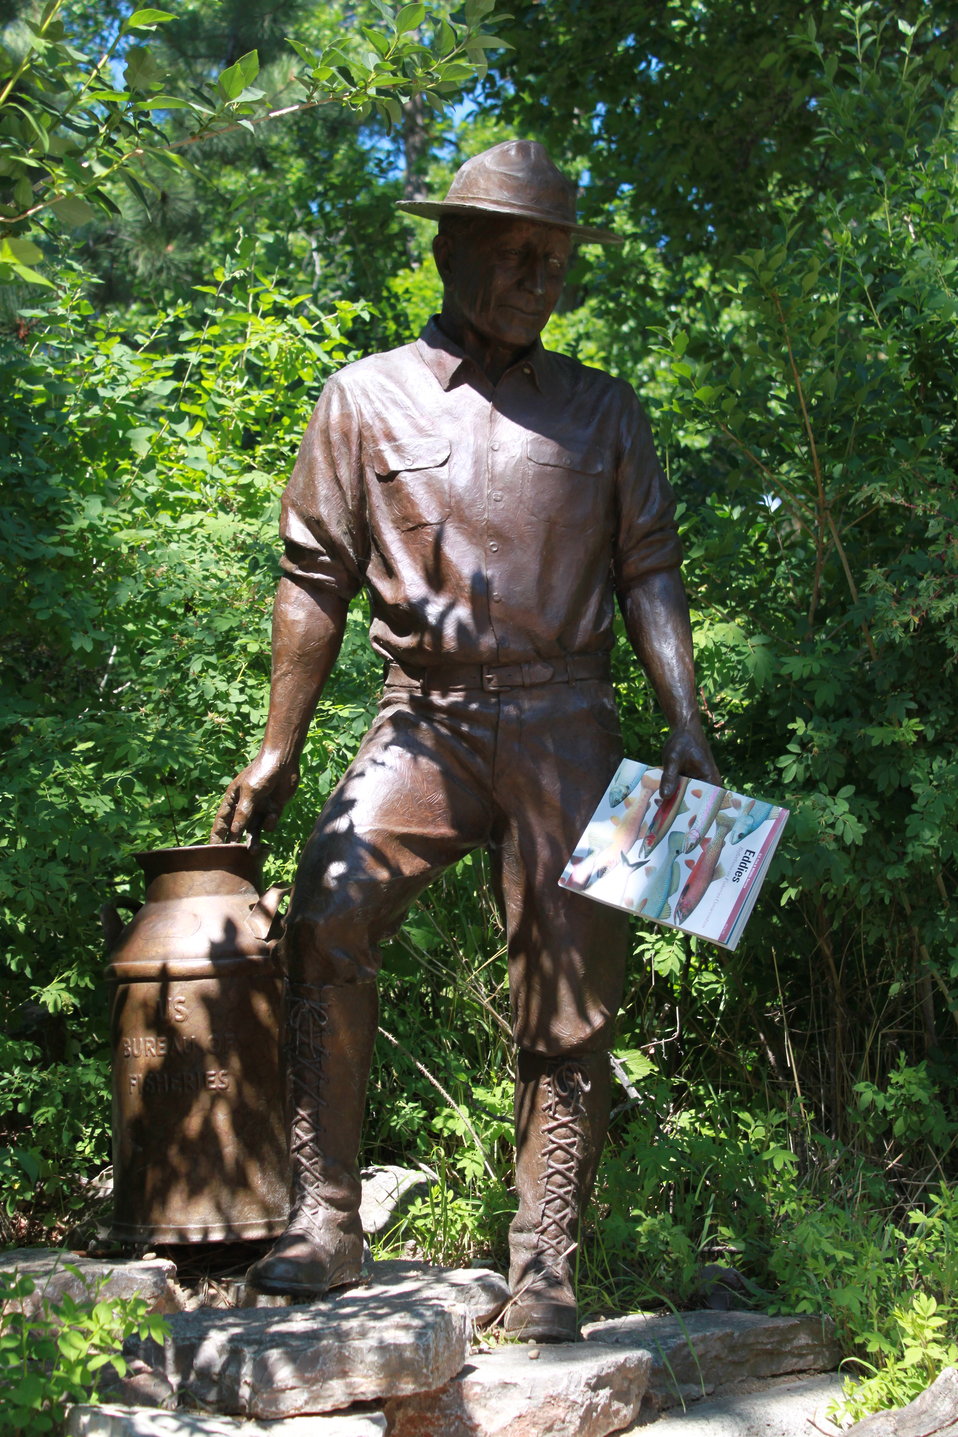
MIB - Men in Bronze Read Eddies

Eddies magazine is published by the USFWS Fisheries Program in Washington DC. This bronze statue memorializes the work of the U.S. Bureau of Fisheries (1903 - 39), a predecessor agency of the U.S. Fish and Wildlife Service. See www.fws.gov/eddies.

Credit: Craig Springer / USFWS

Photo Contest Entry #151